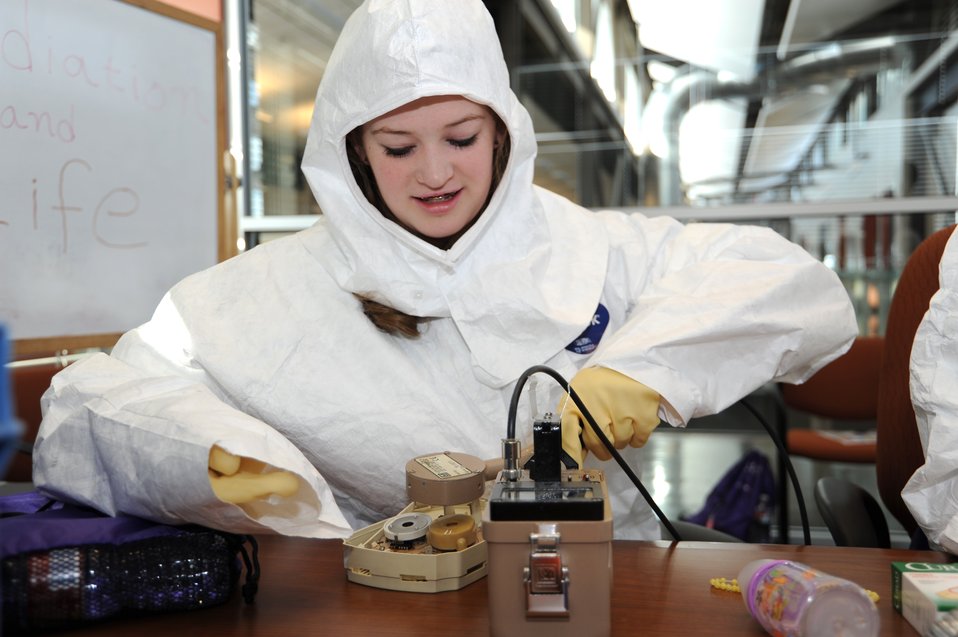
Idaho National Laboratory's annual, day-long My Amazing Future event shows career options to get students excited about science and technology.